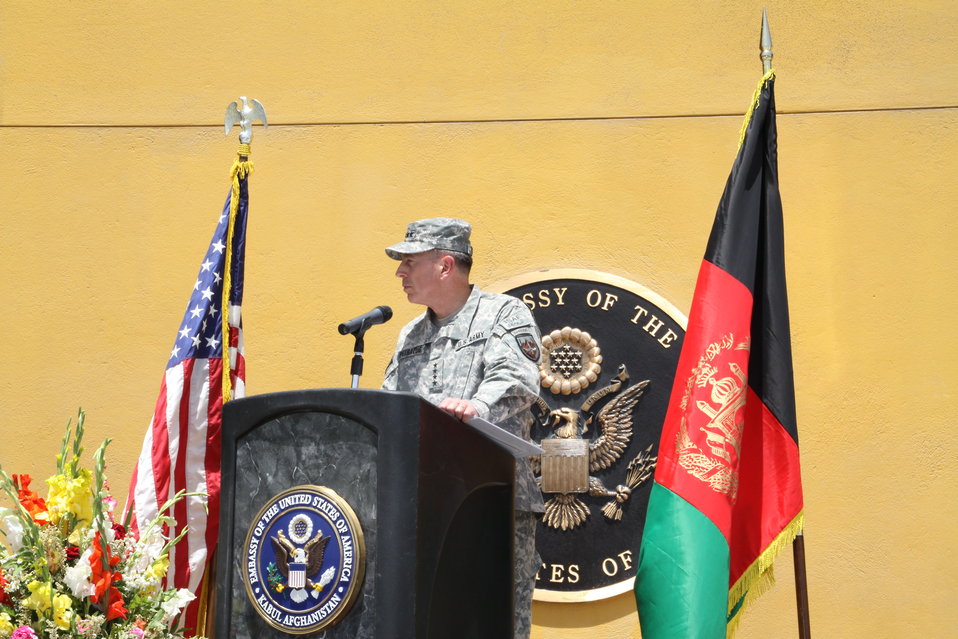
Kabul Official July 4th Celebration